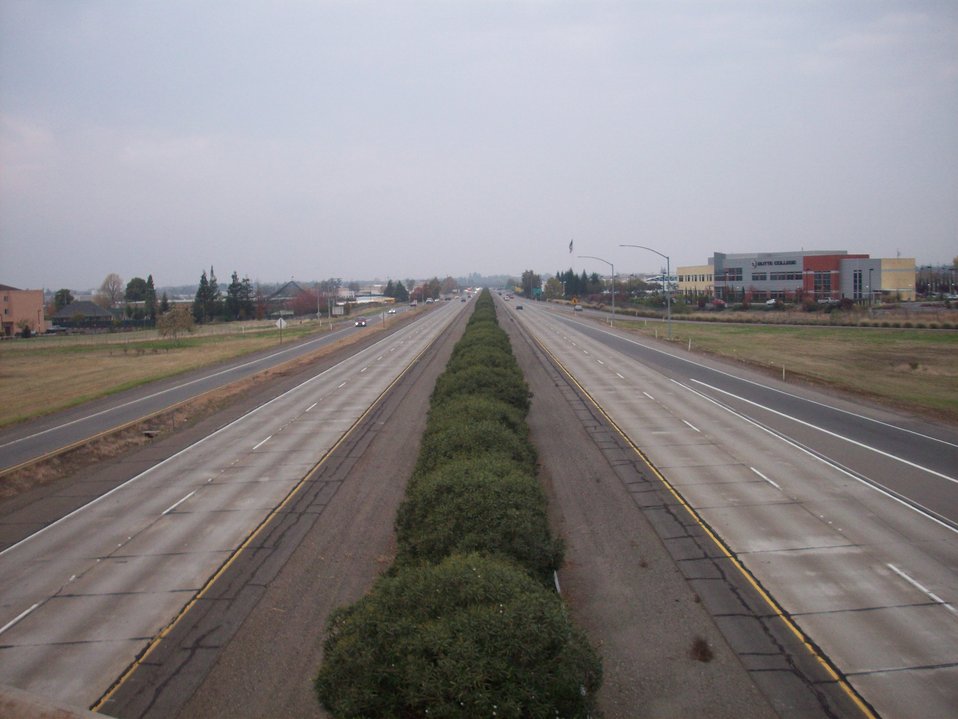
I took this picture myself on November 26, 2008. This image is State Highway 99 in Chico, California as viewed facing north from the bridge where East Park Avenue becomes Skyway. I relinquish all rights. Licensing: Category:California highways Category:Images of Chico